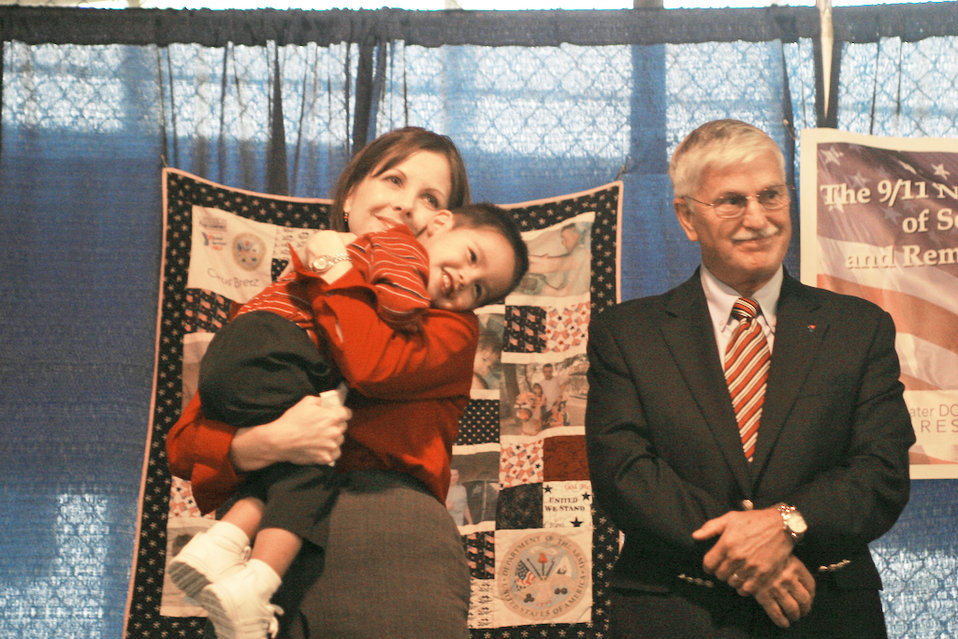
Sew much support

Nathan Jung, son of Tech. Sgt. John and Cathy Jung, received an Operation Kid Comfort quilt at a ceremony Sept. 11, 2009. Sergeant Jung deployed to Afghanistan in July. Operation Kid Comfort is an Armed Services YMCA program whose volunteers have made and distributed 6,000 quilts since 2004. Mike Landers (right) is the deputy national director of the AF YMCA.